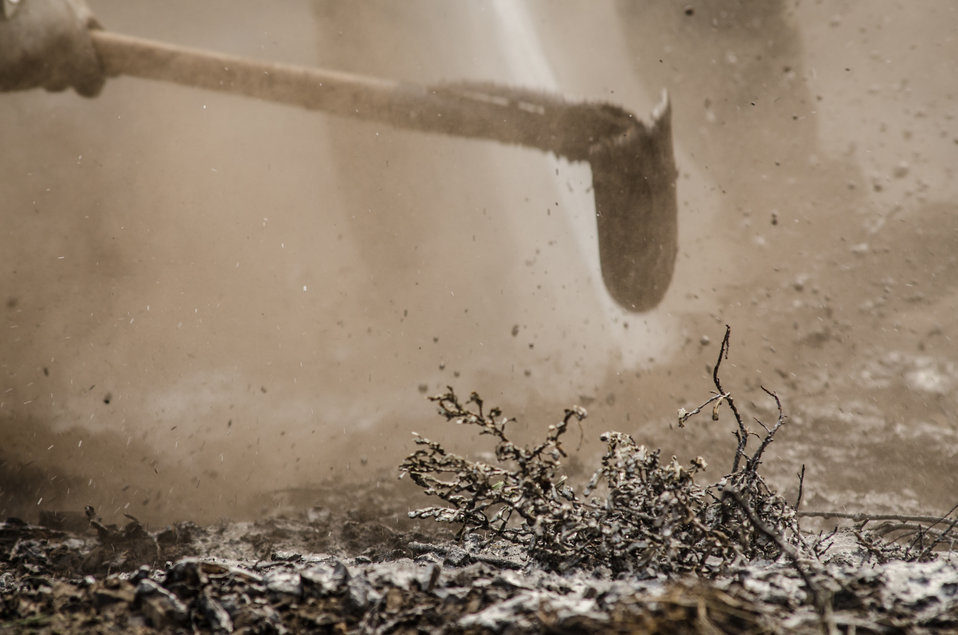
Southern Plains and Comanche Type 2 Initial Attack Crews and an Engine Crew work together to extinguish underground smoldering fires in roots or buried tree limbs, using a variety of hand tools and fire suppressing foam, during the Beaver Creek Fire, west of Hailey, ID, on Wednesday, Aug 21, 2013.